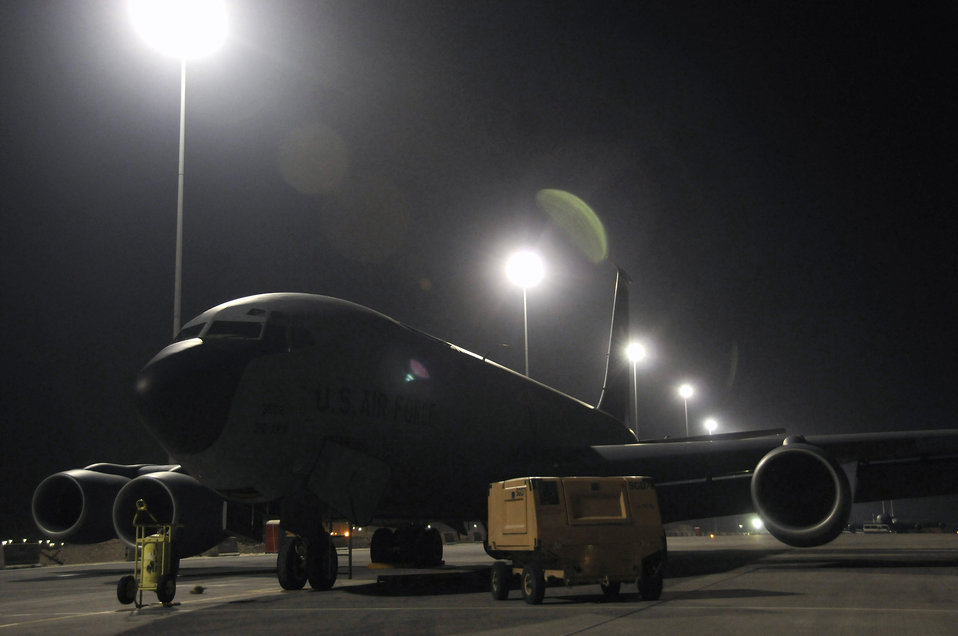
Night light

A KC-135 Stratotanker stands ready to fly a war on terrorism mission Oct. 27 at an air base in Southwest Asia. The KC-135 provides aerial refueling support to Air Force, Navy, Marine Corps and allied nation aircraft operating in the Central Command area of responsibility.